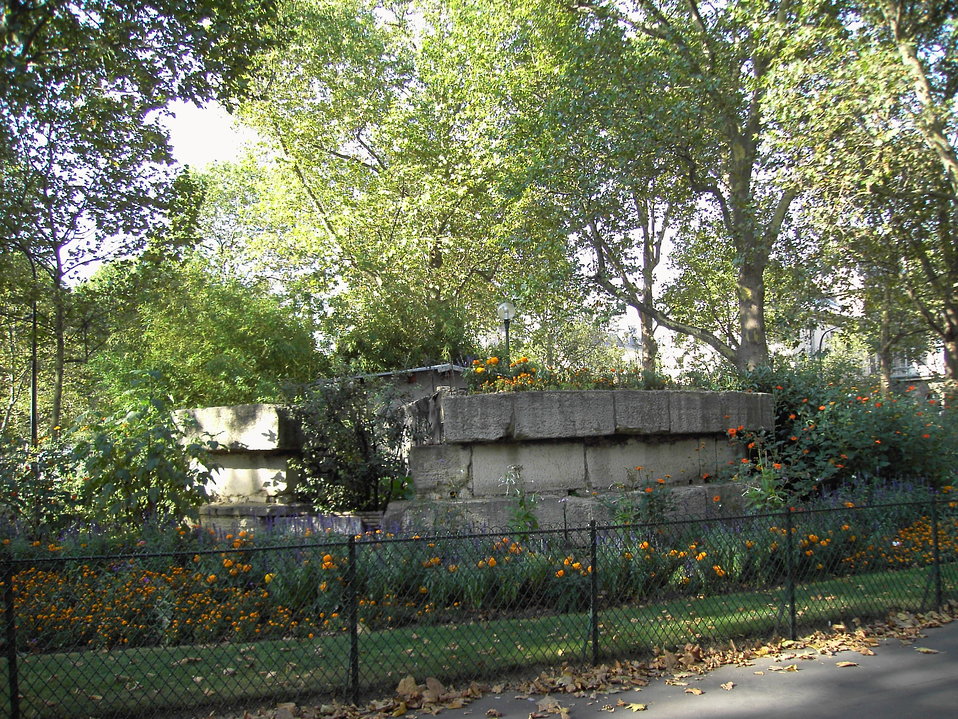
050904 Paris 082 ArsenalFondamentaBastille